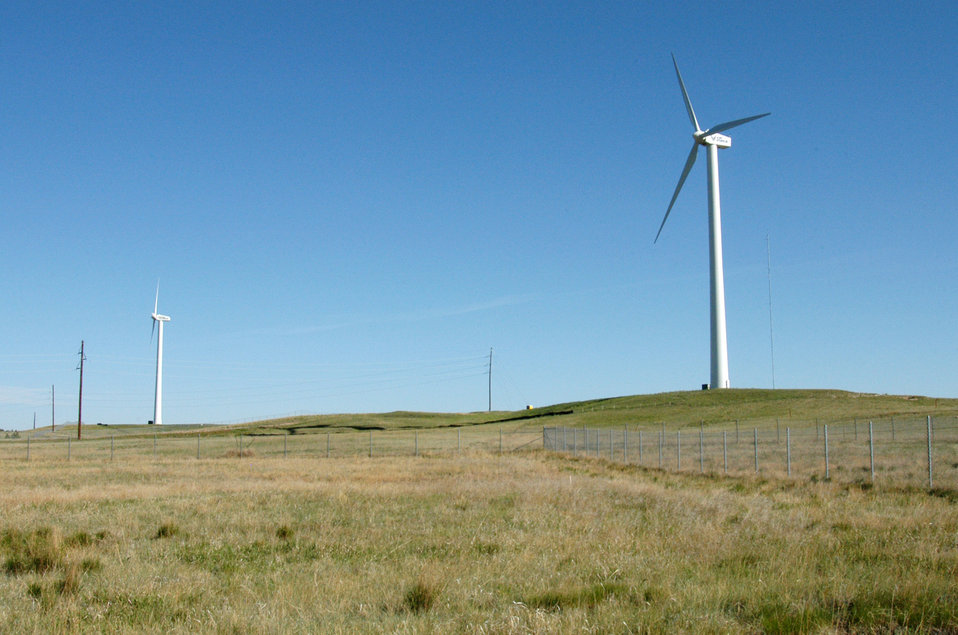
Investing in energy conservation expected to save millions

Two of the three wind turbines in operation at F.E. Warren Air Force Base, Wyo., were paid for with Energy Conservation Investment Program dollars, which is centrally managed and executed by Air Force Civil Engineer Support Agency at Tyndall AFB, Fla.